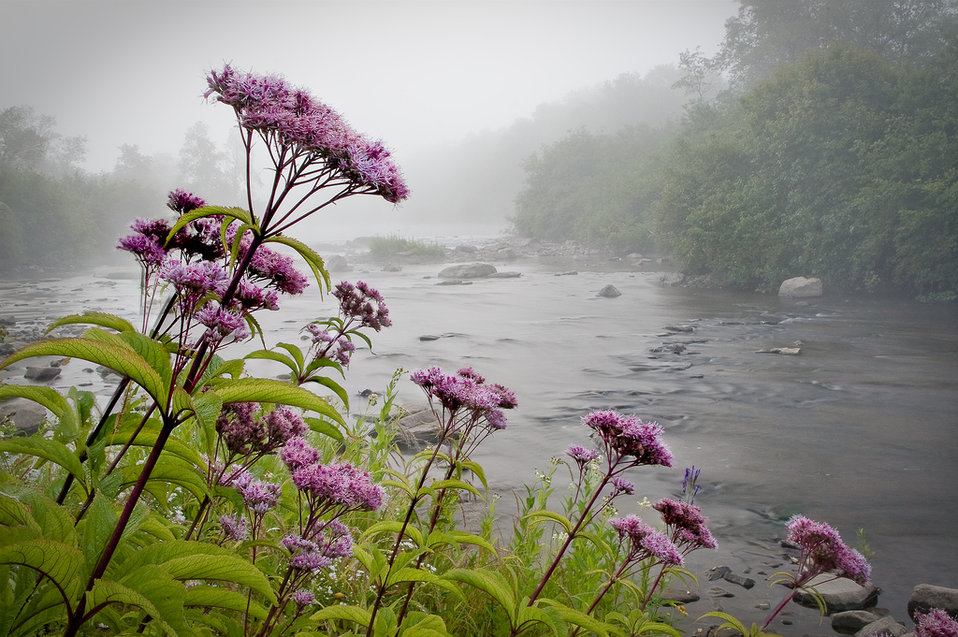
Photo of the Week - The Winner - Joe-pye Weed beside Blackwater River

Our Photo Contest Winner! Photographed at Canaan Valley National Wildlife Refuge.